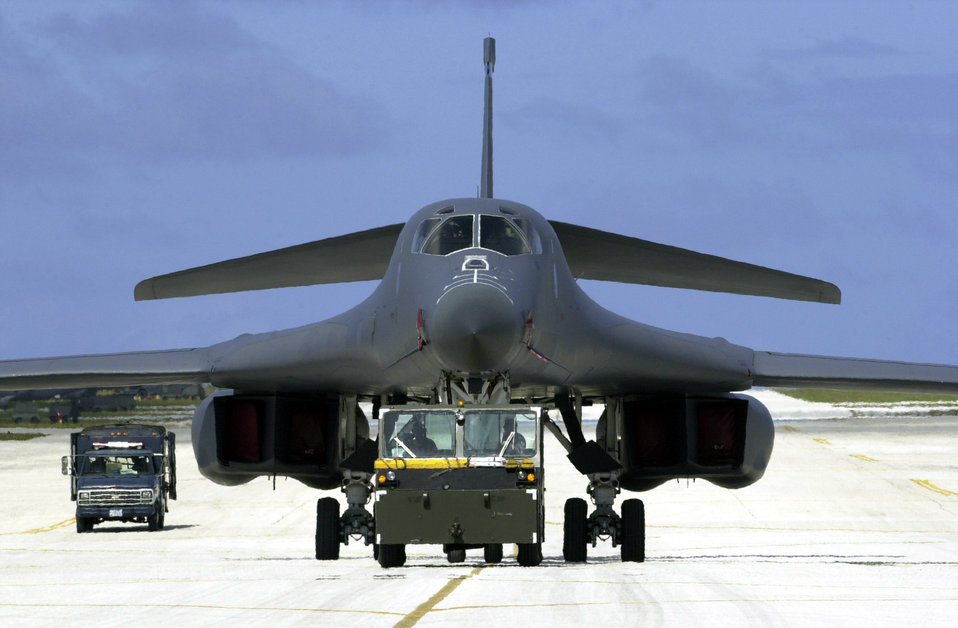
Lancer parking spot

ANDERSEN AIR FORCE BASE, Guam -- A B-1B Lancer gets towed to a new parking spot on the flightline here, Mar. 27th 2003. The bomber is here supporting the 7th Air Expiditionary Wing's mission.